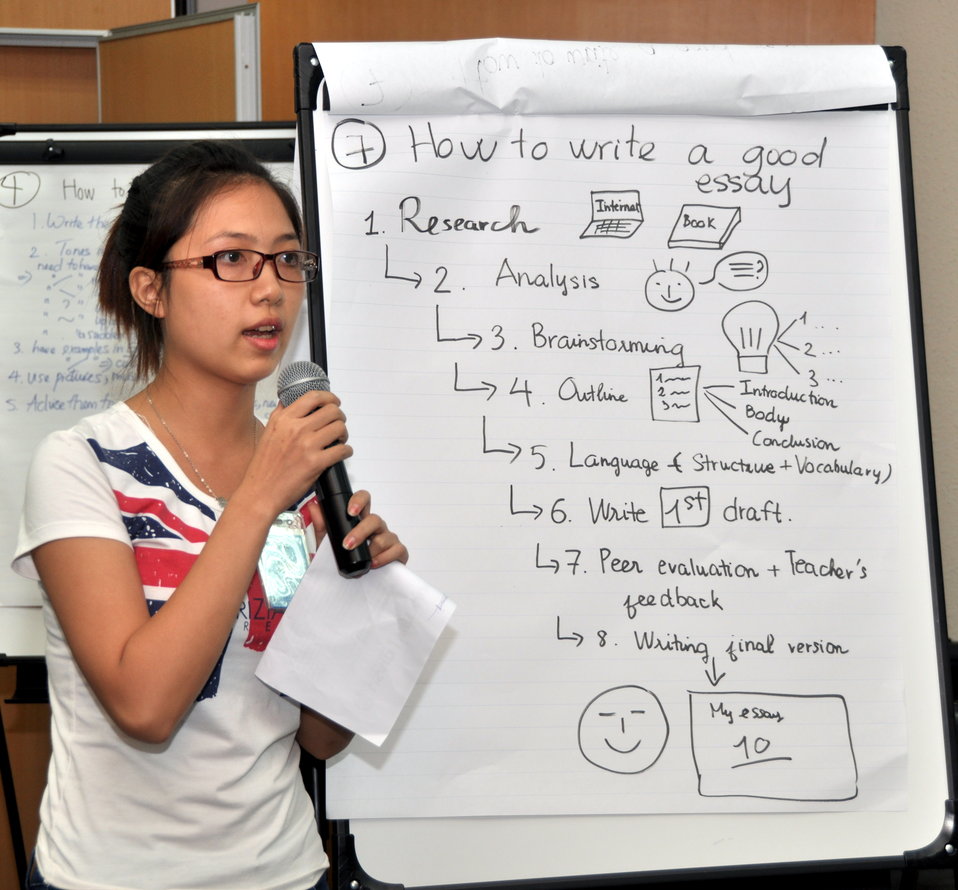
Students join the ‘USAID and Higher Education in Vietnam’ talk

Photo: @USAIDVietnam, November 19, 2012